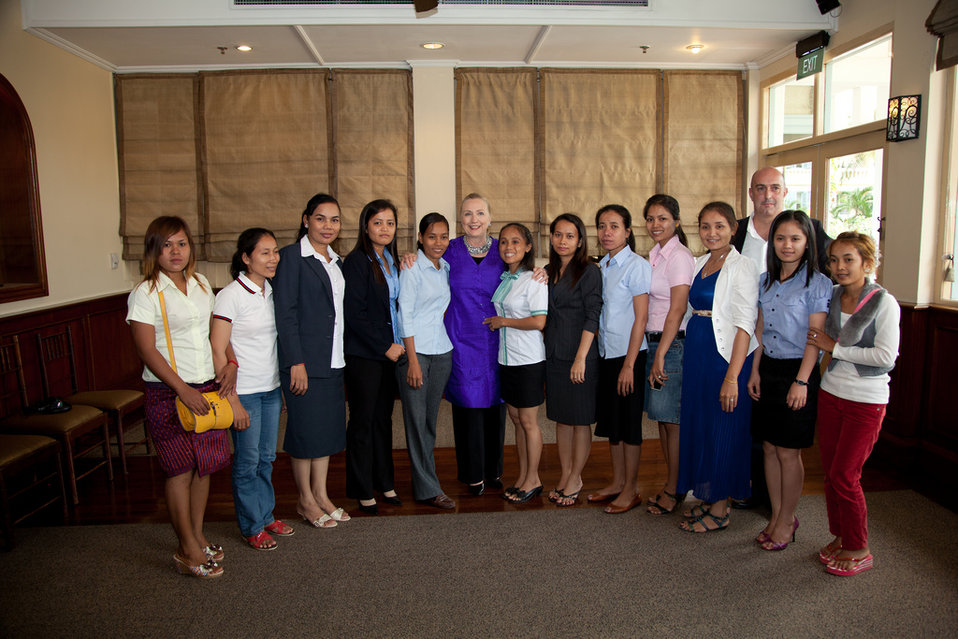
Secretary Clinton With Participants of the Labor Roundtable

U.S. Secretary of State Hillary Rodham Clinton poses for a photo with participants of the Lower Mekong Initiative Women's event in Siem Reap, Cambodia, on July 13, 2012.